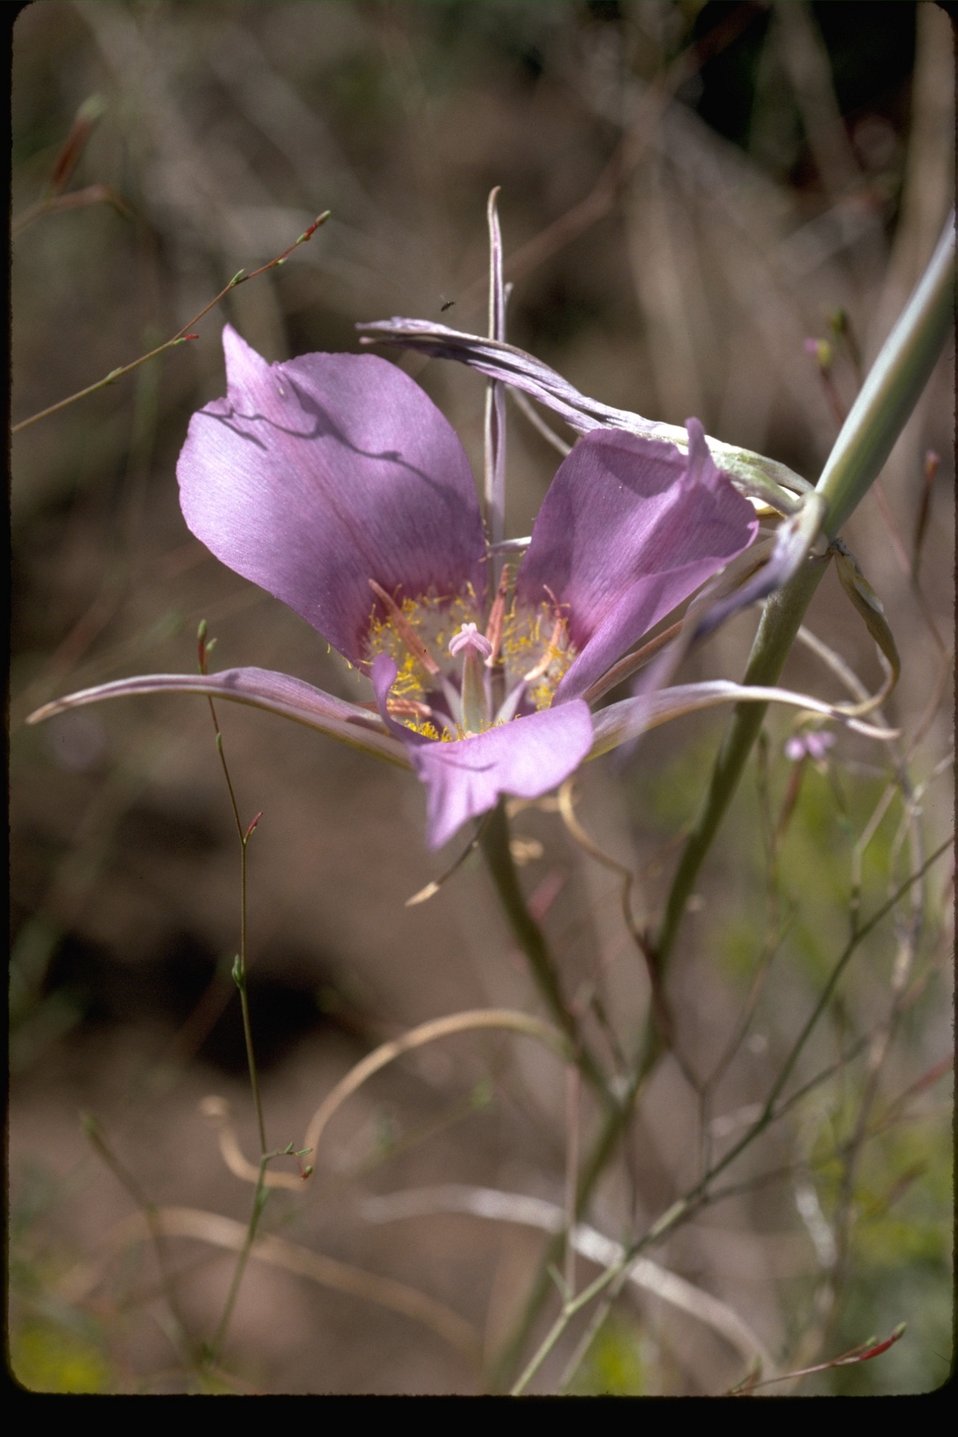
Mariposa Lily (Calochortus macrocorpus) found in Pine Spring Basin area near Burns, Oregon.